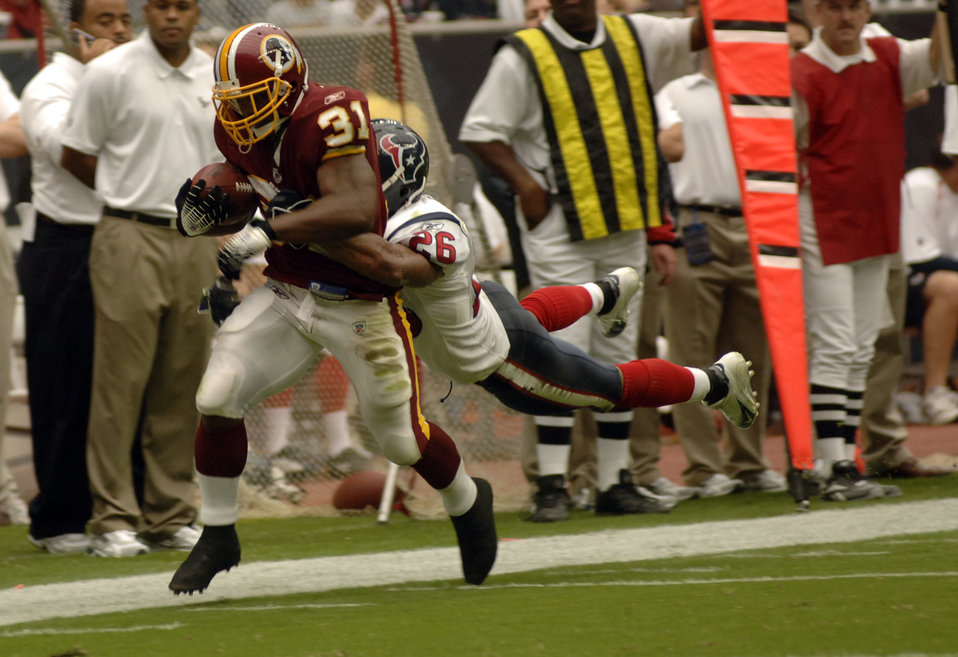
Servicemembers shine during NFL game

Washington Redskins running back Rock Cartwright is tackled by Houston Texans strong safety Glenn Earl during the Redskins 31-15 victory at Reliant Stadium in Houston Sept. 24. The Texans honored military servicemembers in their Salute to the Military day.